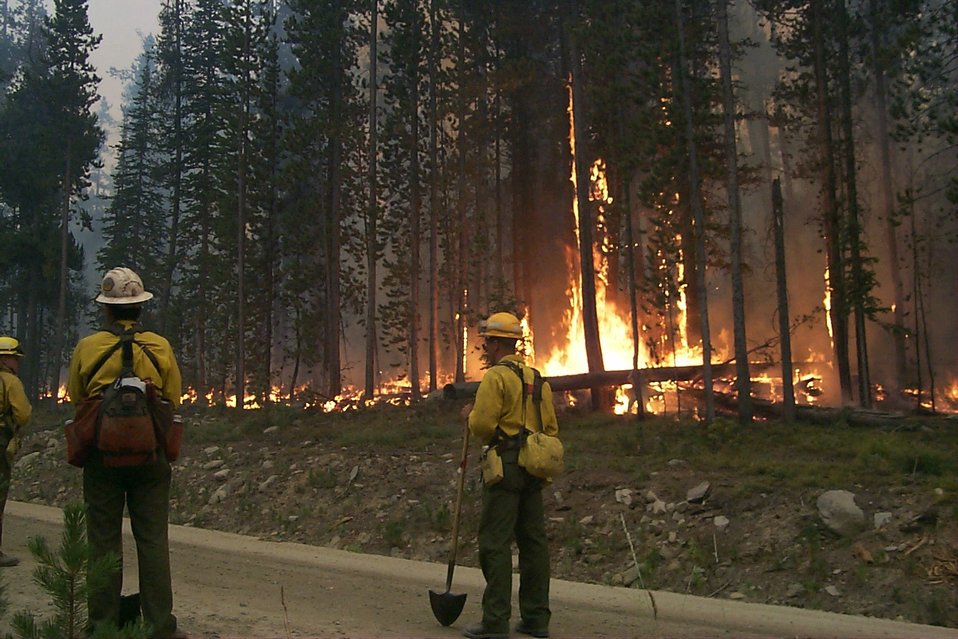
Fire fighters holding line Fire Clearwater Fire Salmon Field Office USRD Upper Snake River District